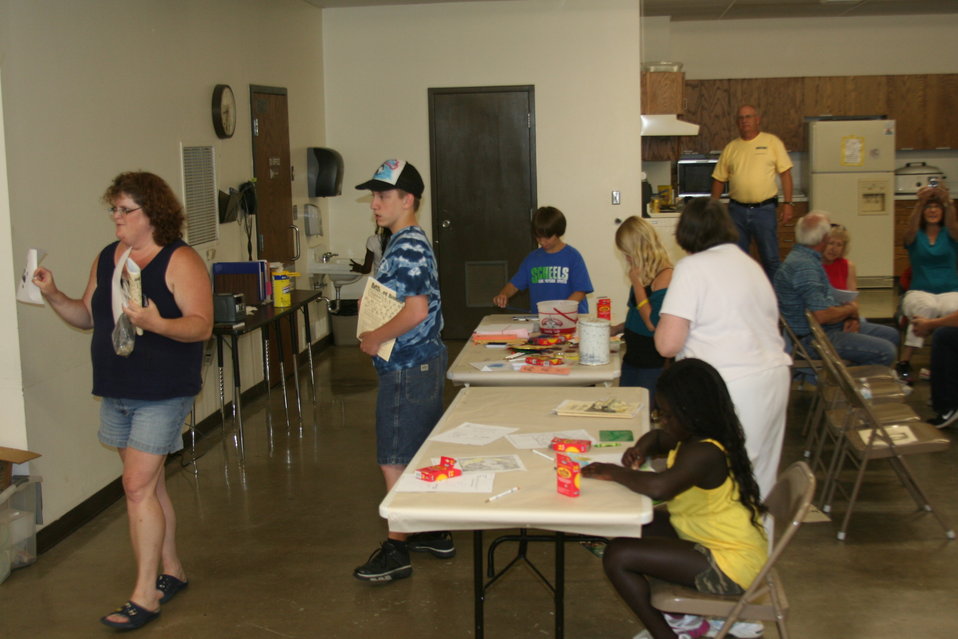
Creatures of the Night 2011